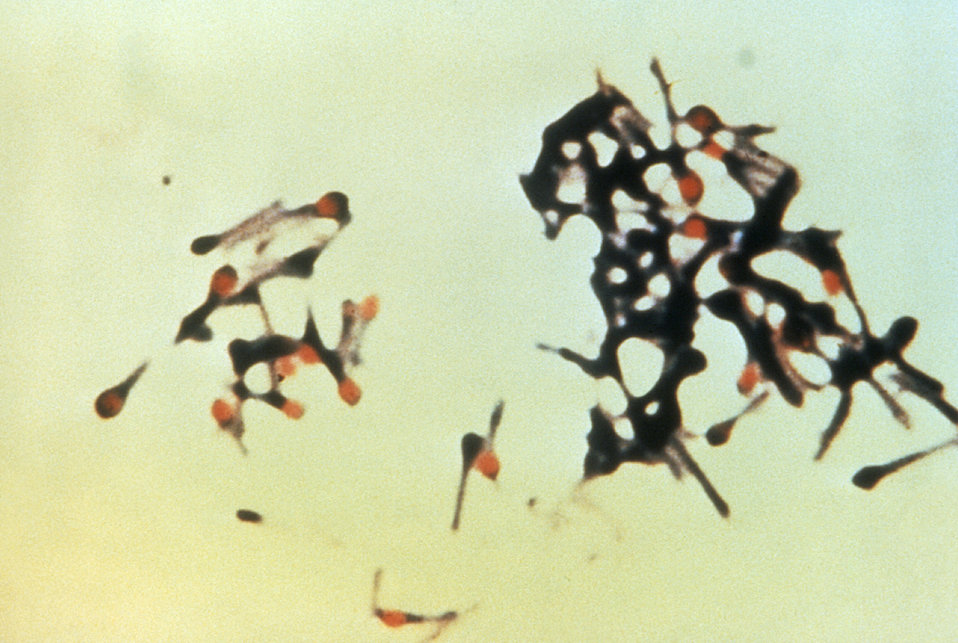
This micrograph depicts a group of Clostridium tetani bacteria, responsible for causing tetanus in humans.